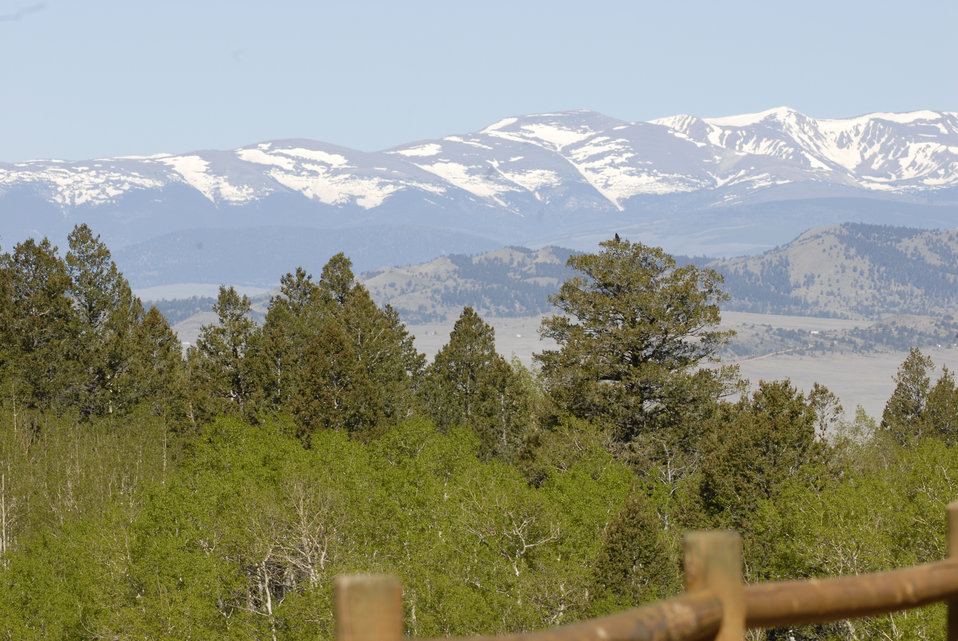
The Rocky Mountains are seen in the background of the San Isabel and Gunnison National Forests, Colorado on June 12, 2012.